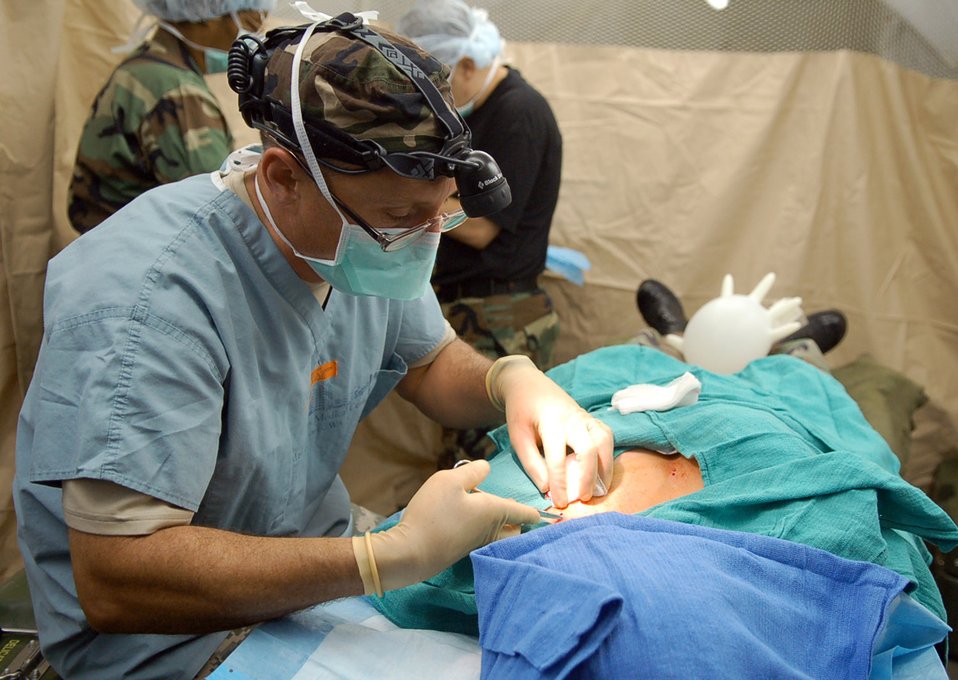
Mobile surgical team trains under cover of darkness

Utilizing a mobile operation room set up in the night Oct. 18, Army Lt. Col. (Dr.) Robert Rush performs a skin lesion removal. The mobile surgical team set up the operating room in an empty field at Soto Cano Air Base, Honduras, at night to practice setting up in limited visibility. Colonel Rush is the Joint Task Force-Bravo Medical Element Mobile Surgical Team commander.